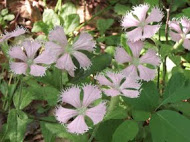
Fringed campion

Scientific name: Silene polypetala
Status: Endangered